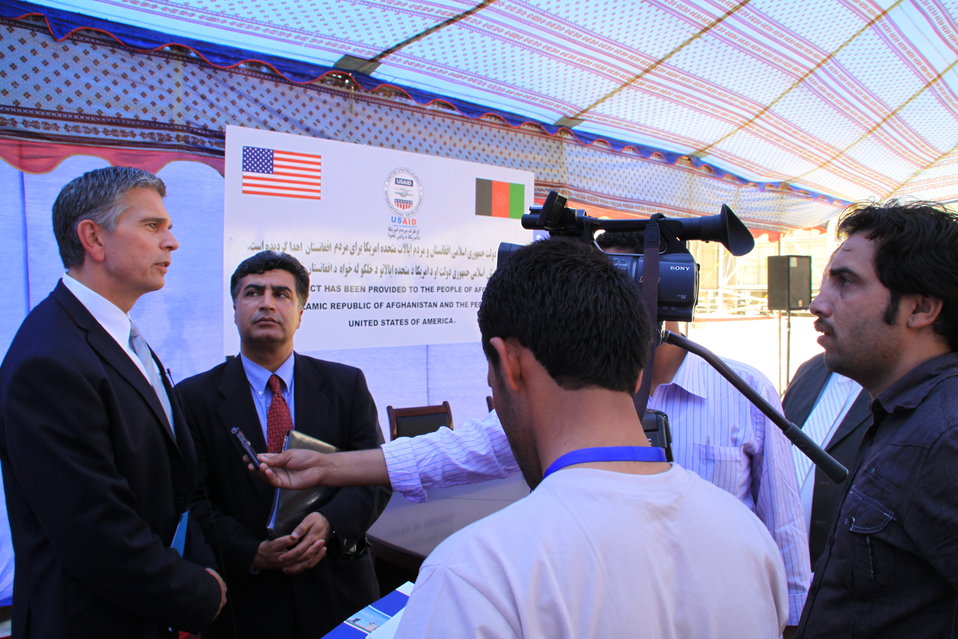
105 MW Tarakhil Power Plant Handover